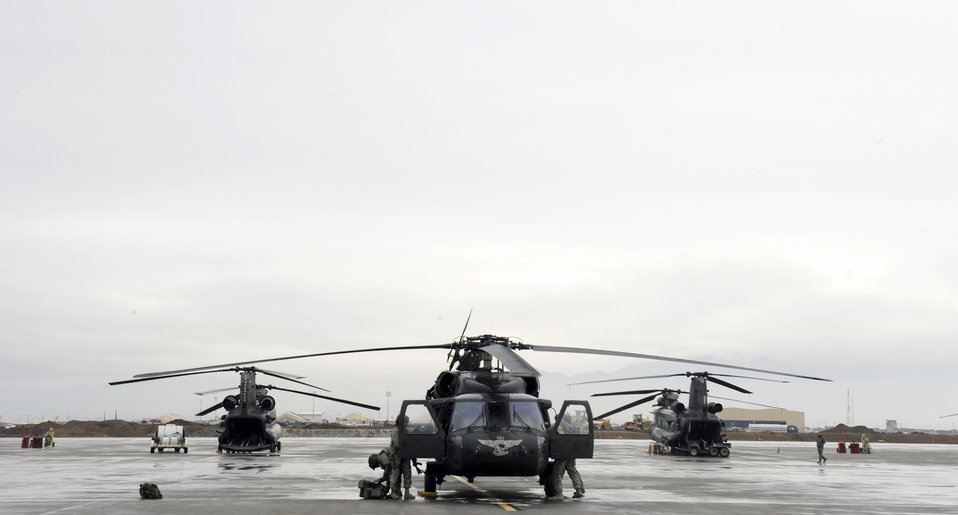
Joint team leads Afghan crew chief academy

A UH-60 Blackhawk aircrew prepares a helicopter for a proficiency training flight for Afghanistan National Army Air Corp crew chief students to apply lessons taught to them by a team of Airmen from the 440th Air Expeditionary Advisory Squadron and Soldiers from the 3rd Combat Aviation Brigade, Task Force Falcon, Feb. 28, 2010, at Bagram Airfield, Afghanistan.